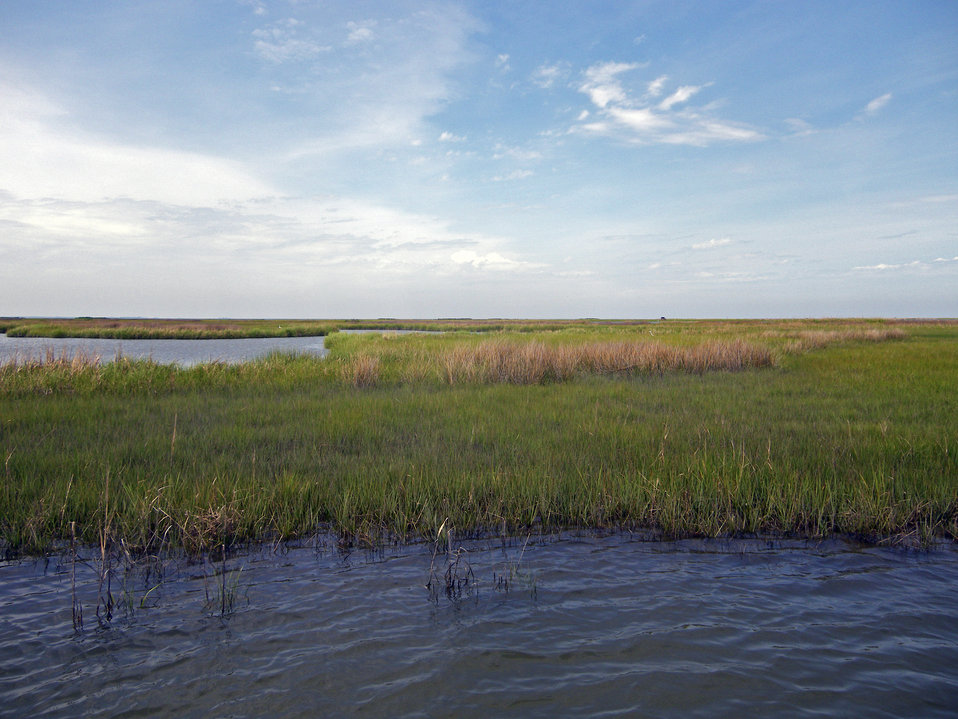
Marsh

Plum Tree Island National Wildlife Refuge, VA.